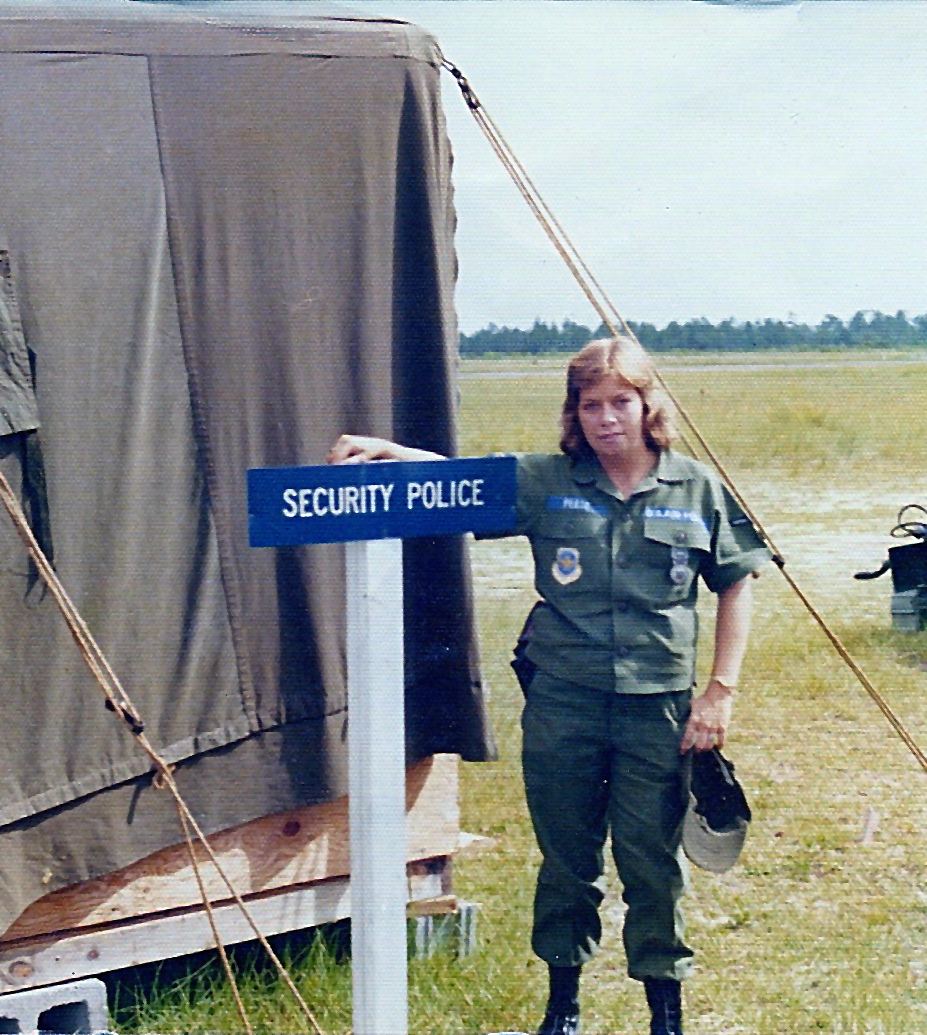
Ellen Zeltmann, an Office Automation Clerk at Back Bay National Wildlife Refuge in Virginia Beach, Virginia, served in the U.S. Air Force from 1974 to 1977 working with the Security Police Squadron.